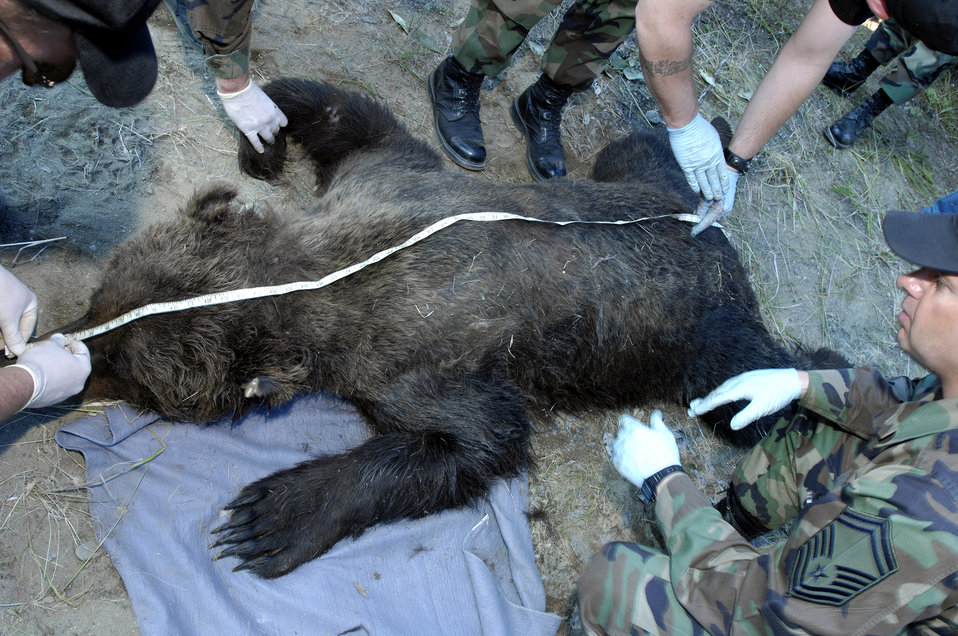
Unbearable time at Elmendorf

A brown bear that was trapped and tranquilized is measured for overall length July 17 at Elmendorf Air Force Base, Alaska. Elmendorf AFB's military conservation agents and the Alaska Department of Fish and Game took DNA, blood and hair samples, measurements and fit the bear with a tracking collar that will allow the bear's movements to be monitored by global positioning satellites. The bear, a female around 6 years old and weighing more than 400 pounds, had been spotted near the base golf course and a barrel trap was set by base conservation agents. After trapping and collaring the bear, agents relocated the bear to a remote part of the base and monitored it from a distance until the bear woke and moved into the woods. The Department of Defense funded a study through the ADF&G to monitor the movement of brown bear on Elmendorf AFB and nearby Fort Richardson.